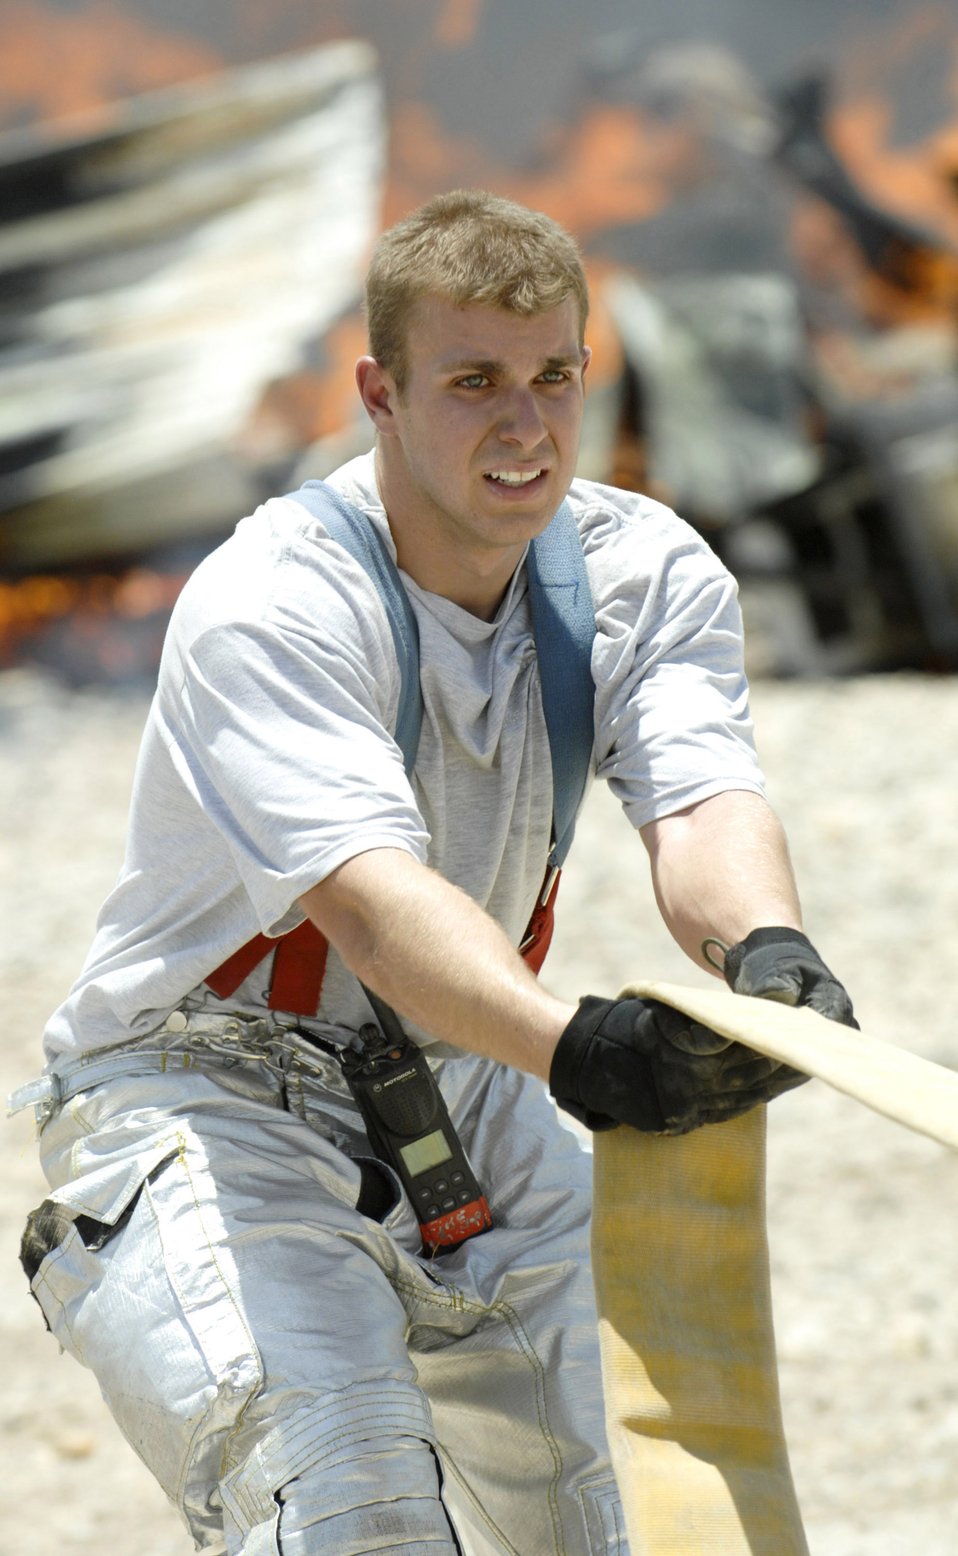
Reeling out the hose

Airman 1st Class Brandon Smith stretches out a hose Jun 19 to assist fellow firefighters responding to a fire in Camp Adder, Iraq. Airman Smith is with the 407th Expeditionary Civil Engineer Squadron, Ali Air Base, Iraq,